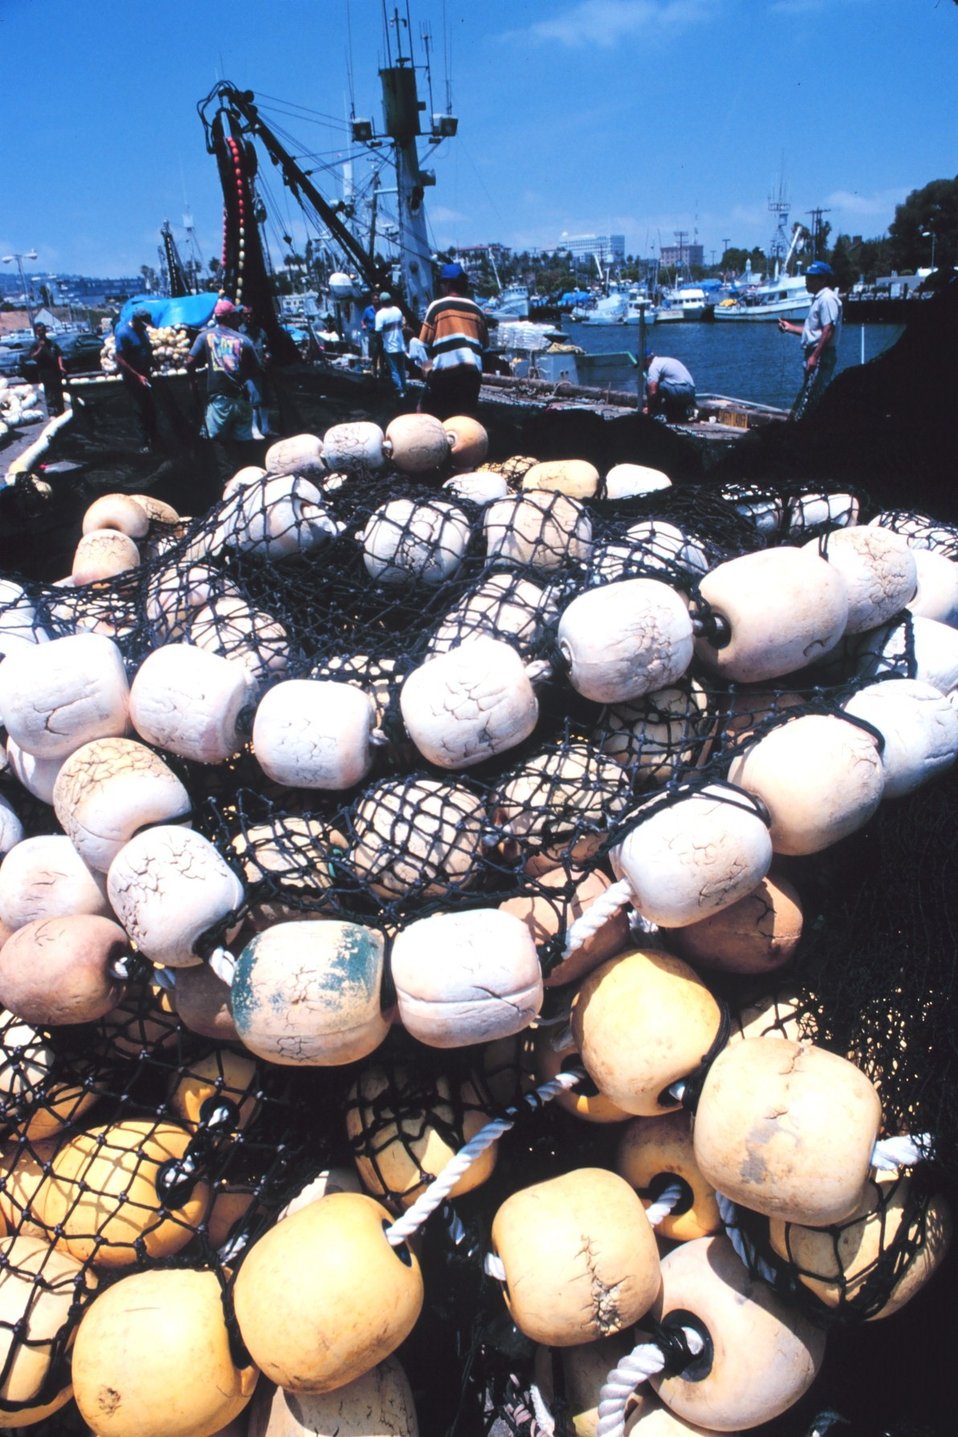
The paraphernalia of fishing on the pier - mountains of nets, floats, etc.